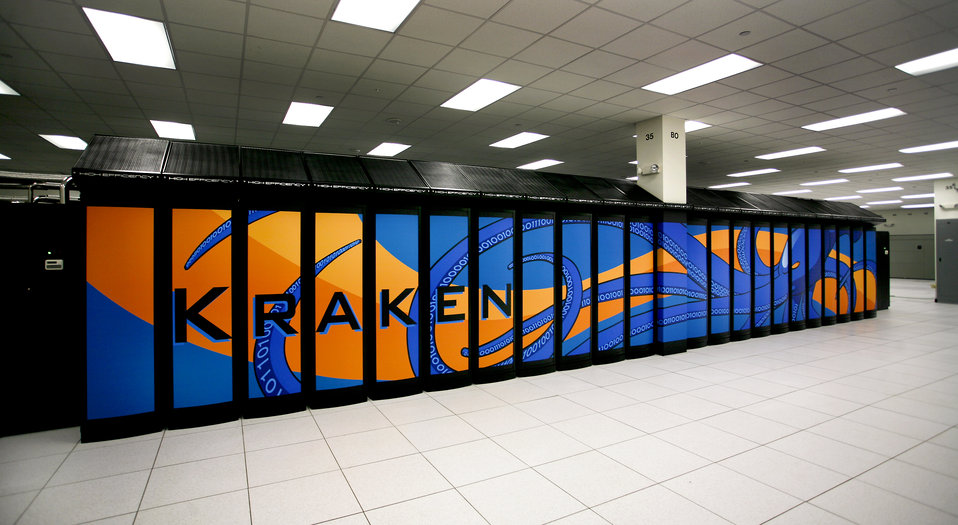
At Oak Ridge National Laboratory, the Cray XT5 Kraken, managed by the University of Tennessee and funded by the National Science Foundation, is the world's fastest academic supercomputer.